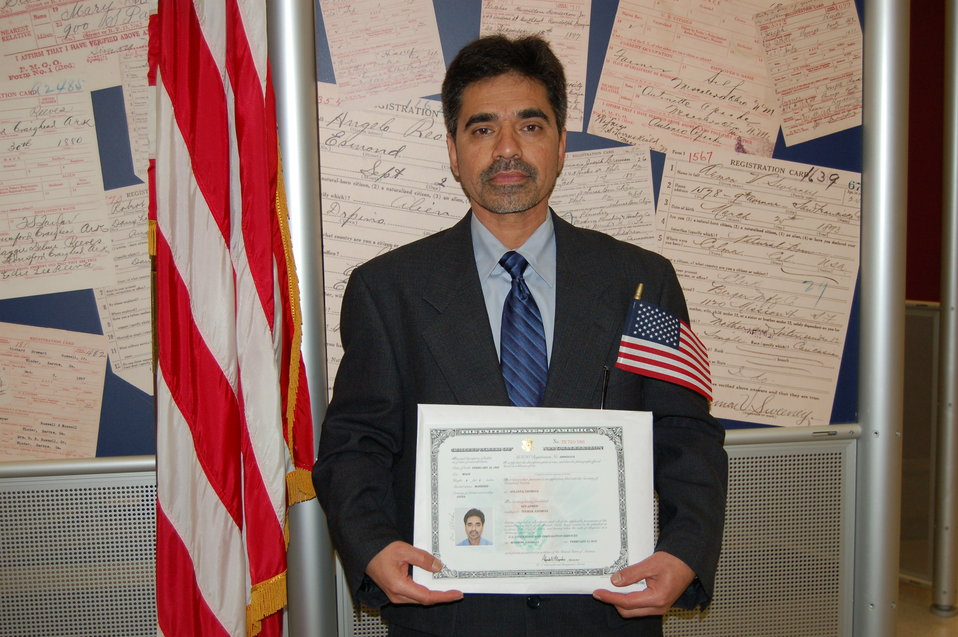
New Citizens